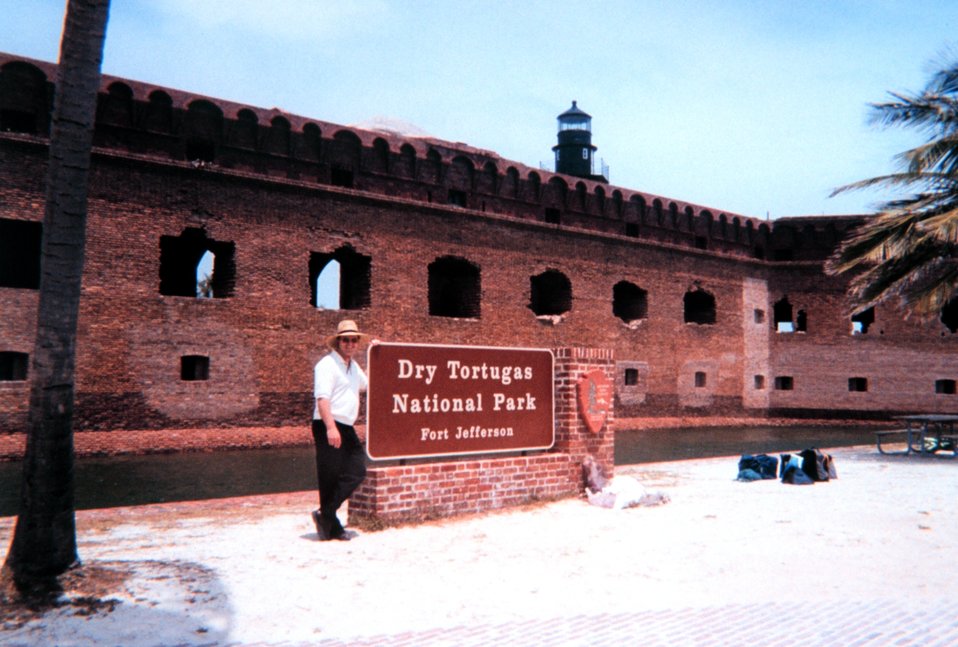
The mandatory pose at the entrance to Fort Jefferson.